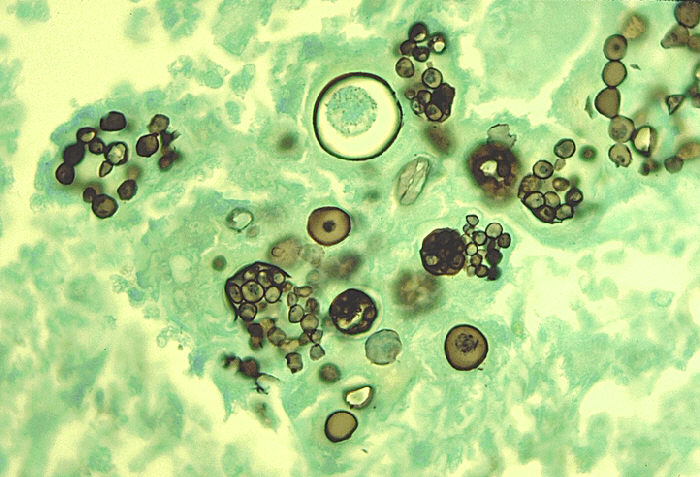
Histopathology of coccidioidomycosis, lung. Methenamine silver stain.